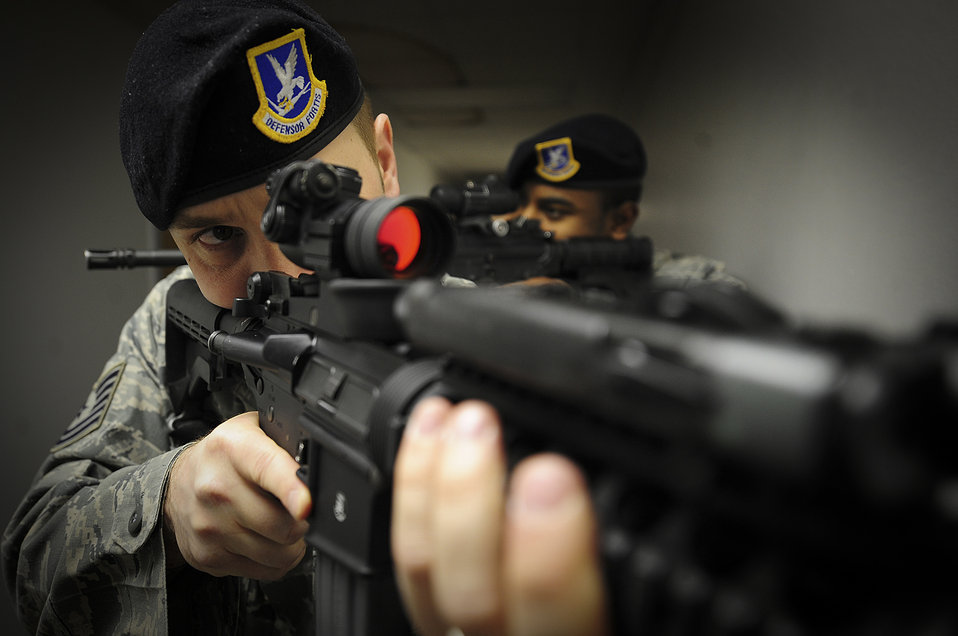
Got it covered

Tech Sgt. Joel Meyer (front) and Staff Sgt. Derek Walton practice room-clearing tactics during a security exercise April 5, 2010. The NCOs are with the 28th Security Forces Squadron at Ellsworth Air Force Base, S.D.